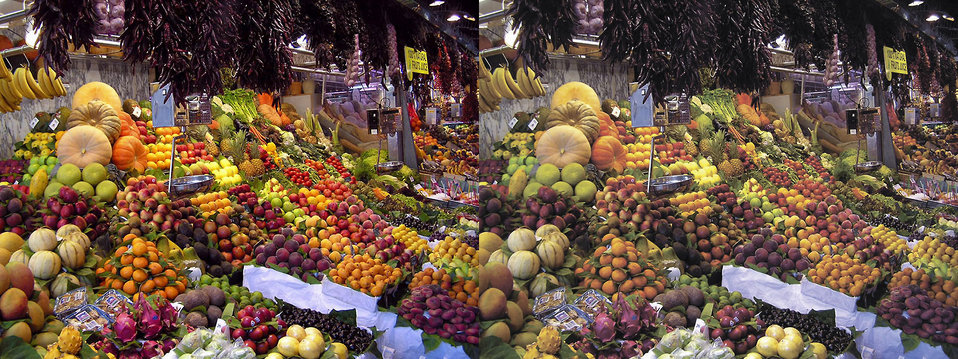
This is a regroupment of the color enhanced version of La Boqueria and a CMYK conversion destined for newspaper, in order to really demonstrate the impact that can happen in vivid colors when a CMYK conversion occurs